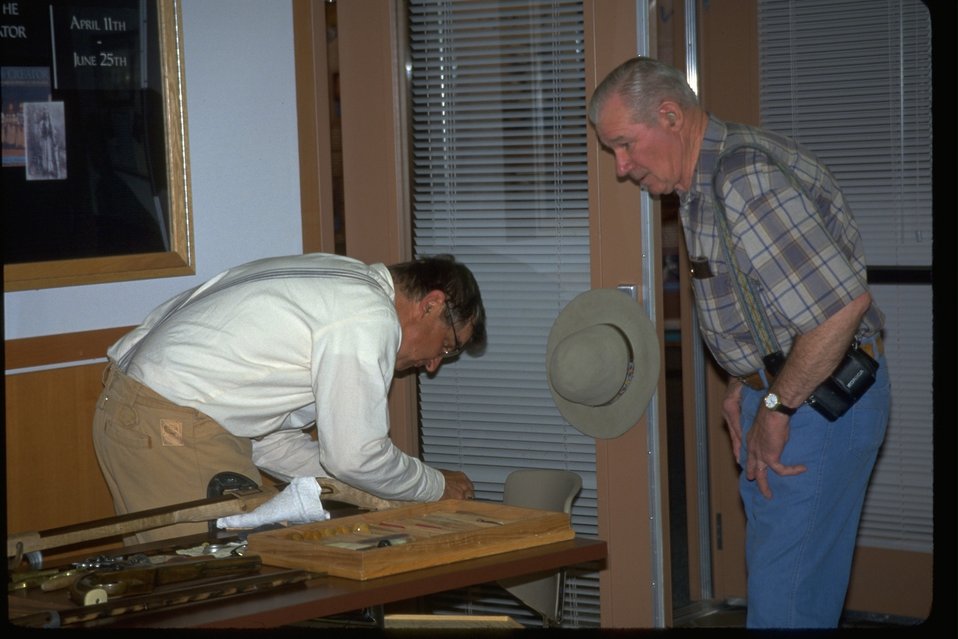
Dick Micha demonstrating gunsmithing to visitors at the NHOTIC.